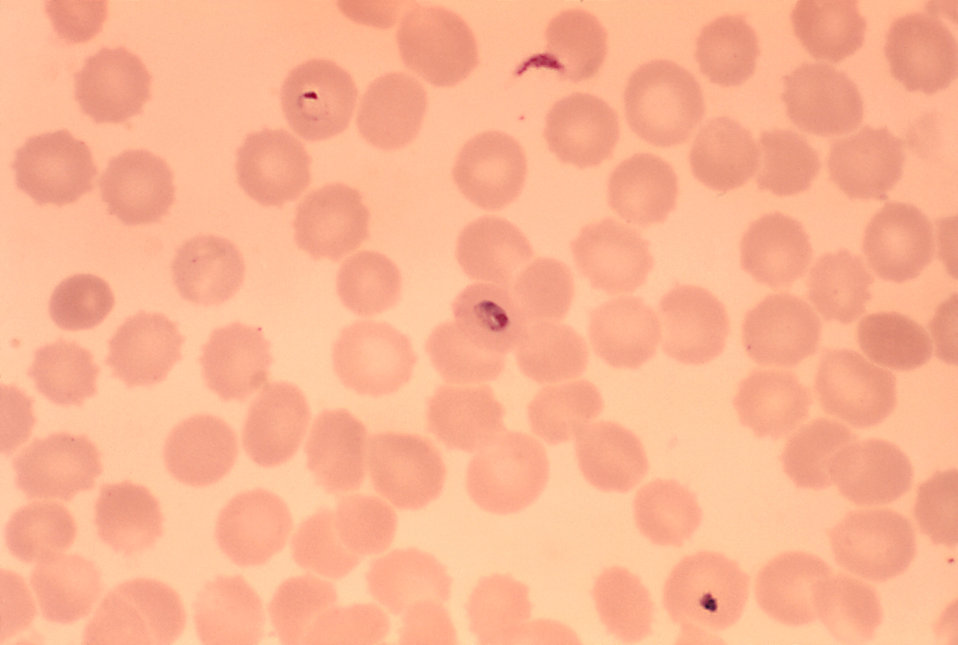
This micrograph reveals both a growing Plasmodium falciparum trophozoite and ring form of this parasite.